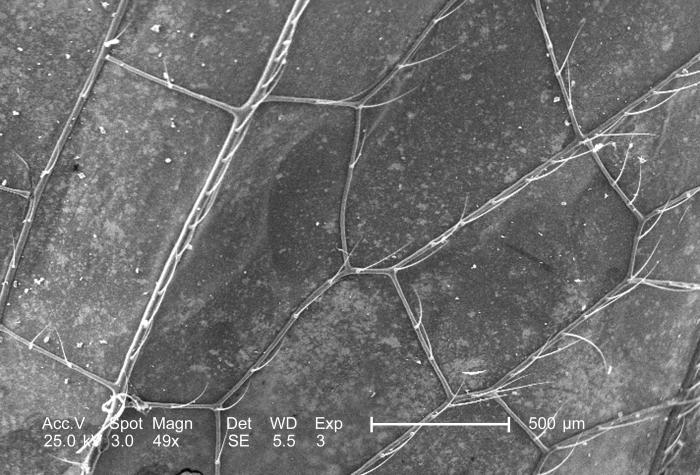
Under a low magnification of 49x, this 2005 scanning electron micrograph (SEM) depicted the wing venation of an unidentified deceased dragonfly found on the grounds of the Decatur, Georgia suburbs. The wing veins fulfill a number of functions including the regulation of the insect's temperature by allowing its blood to circulate through the beating wings, thereby, dissipating excessive heat, or warming its blood when it's too cool. Due to an increased turgor pressure produced by fluid-filled vessels the wing veins act as supportive struts, maintaining the structural shape of the bilateral wings during flight. The wings also act as sensory structures, due to the presence of sensorial hairs, or 'setae' on their surfaces, which can be clearly seen in this image.